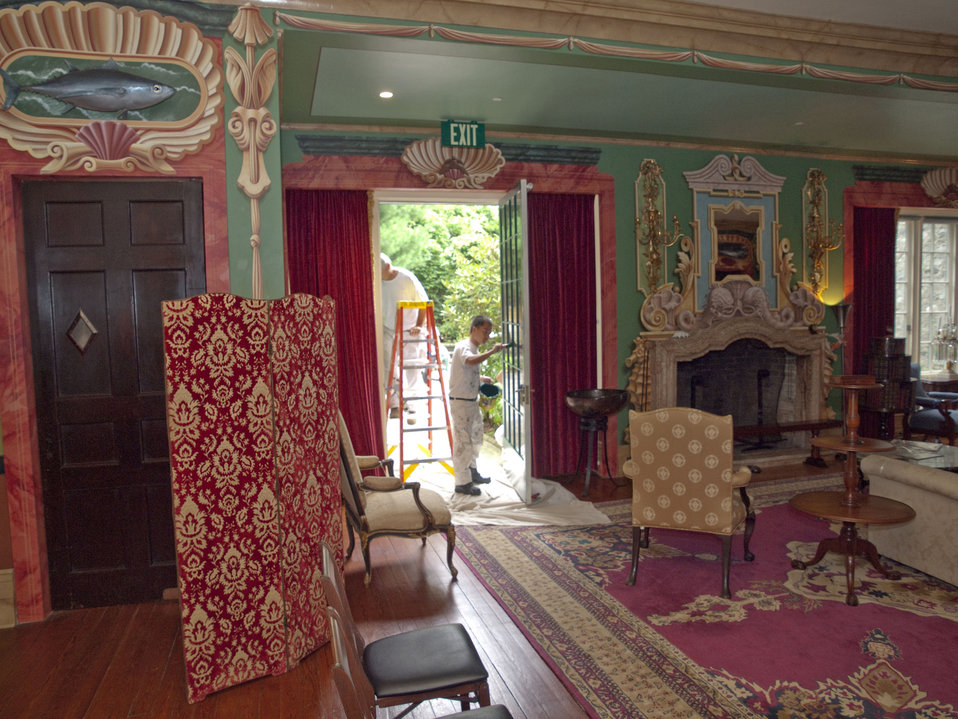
Job Corps students help to restore Grey Towers National Historic Site. $2,440,000 in Recovery Act funds were allocated to repair and refurbish the house and grounds of the ancestral home of the first Chief of the Forest Service and two-term Pennsylvania governor Gifford Pinchot on Tuesday August 3, 2010 in Milford, PA. This project at the 123-year-old site repairs various deficiencies with the buildings and grounds, restores areas of the historic landscape, improves visitor safety and site security, provides a more sustainable facility, and enhances the visitor experience. It helps to ensure the historic site is maintained for years to come. USDA Forest Service Photo by Keith Riggs.
.